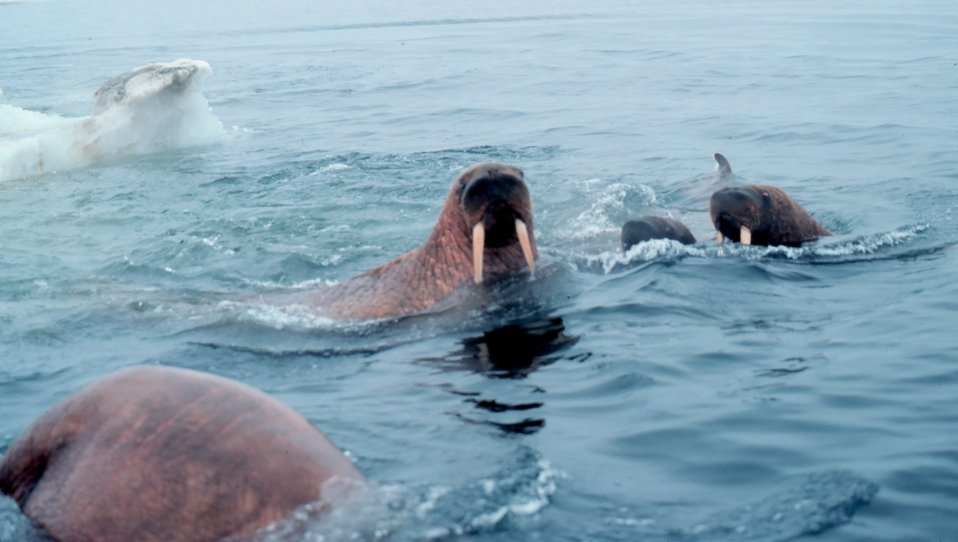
Walrus - Odobenus rosmarus divergens - swimming in the ice floes in the Bering Sea.